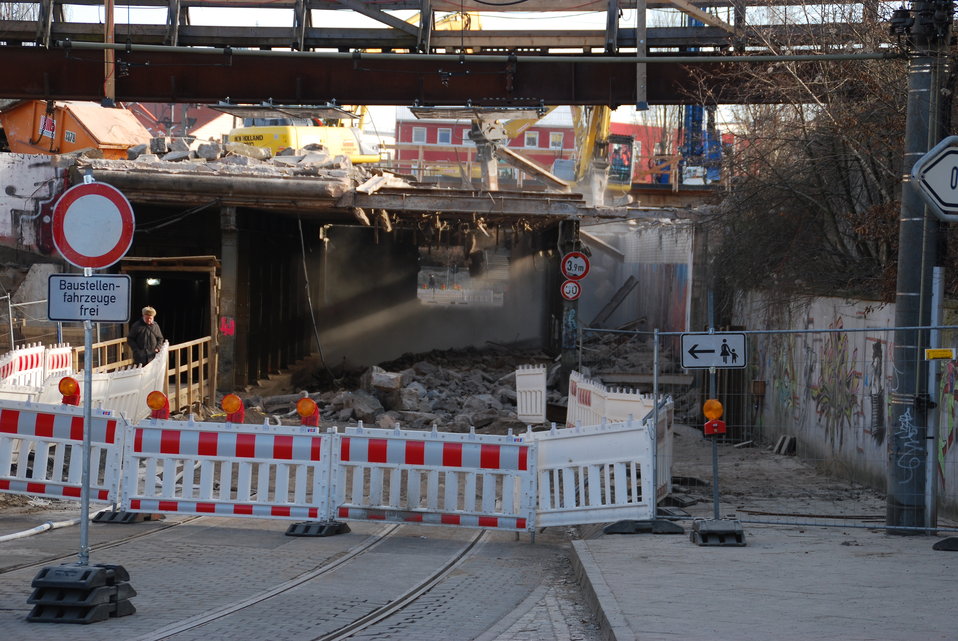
Abriss Bahnhofstunnel Frankfurt (Oder)